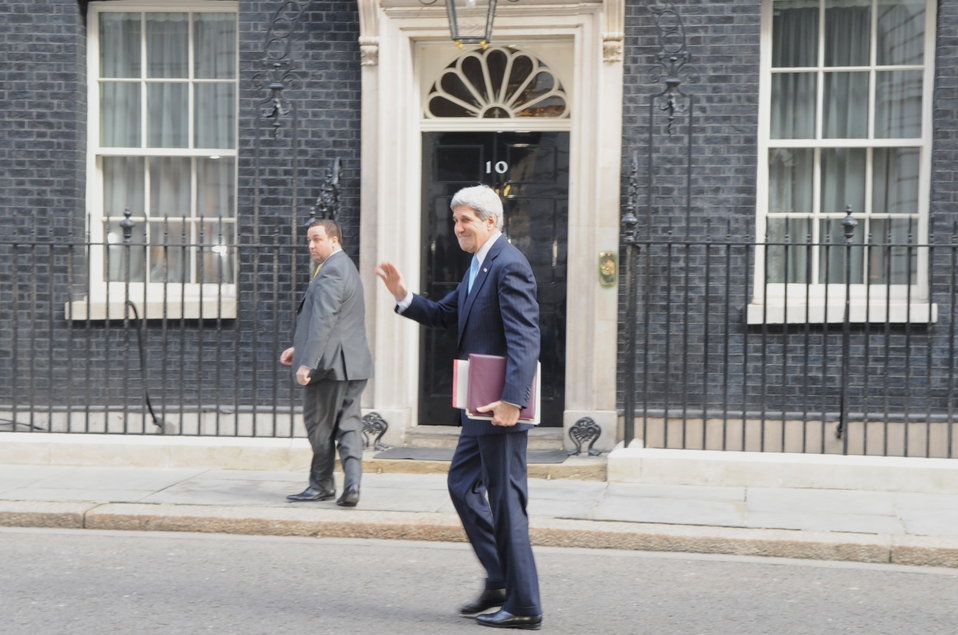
Secretary Kerry Arrives in London to Meet British Prime Minister Cameron

U.S. Secretary of State John Kerry arrives at No. 10 Downing Street in London, United Kingdom, on March 14, 2014, for a meeting with British Prime Minister David Cameron focused on Middle East peace talks and Russian intervention in Crimea.